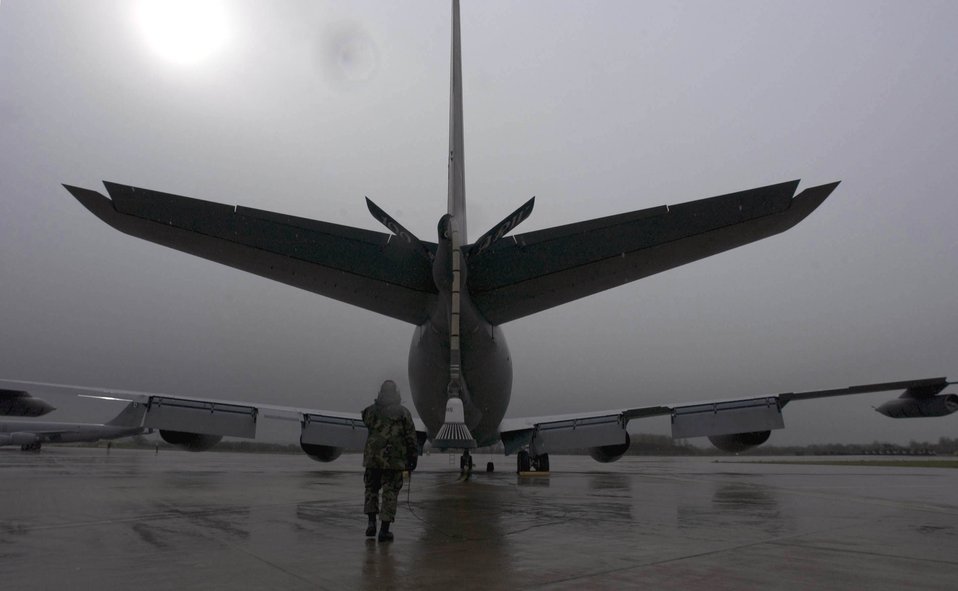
Flying out of Fairford

ROYAL AIR FORCE FAIRFORD, England -- Staff Sgt. Matthew Gniotczynski waits for the aircrew to begin a flight-controls check. KC-135 Stratotankers from the 351st Expeditionary Air Refueling Squadron at Royal Air Force Mildenhall will fly out of the airstrip here while Mildenhall's runway is under construction. Sergeant Gniotczynski is a crew chief with the 351st Expeditionary Maintenance Squadron.